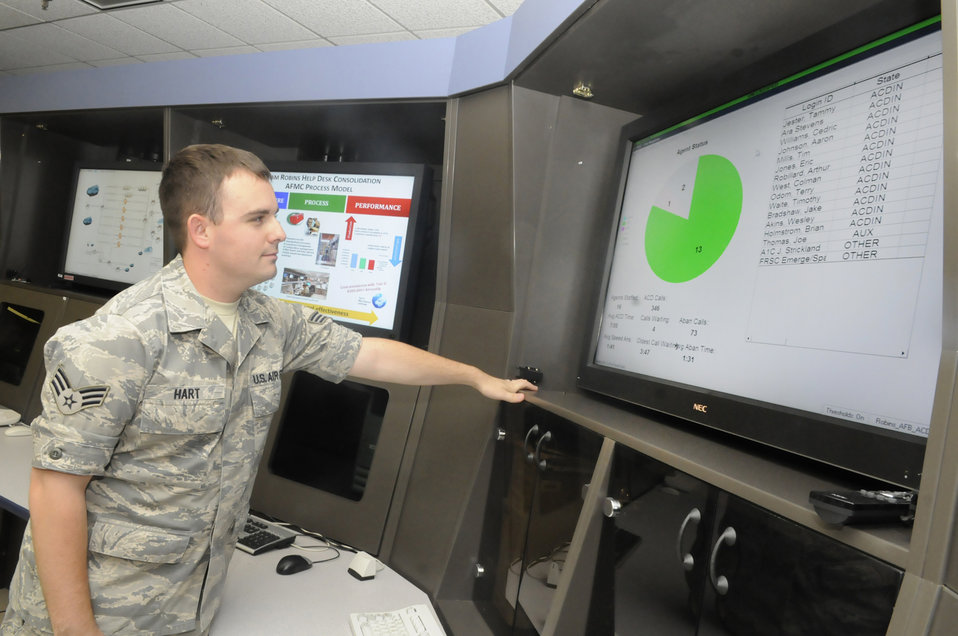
New communications directorate

Senior Airman David Hart, with the 78th Communications Squadron at Robins Air Force Base, Ga., checks the status of incoming help desk calls.